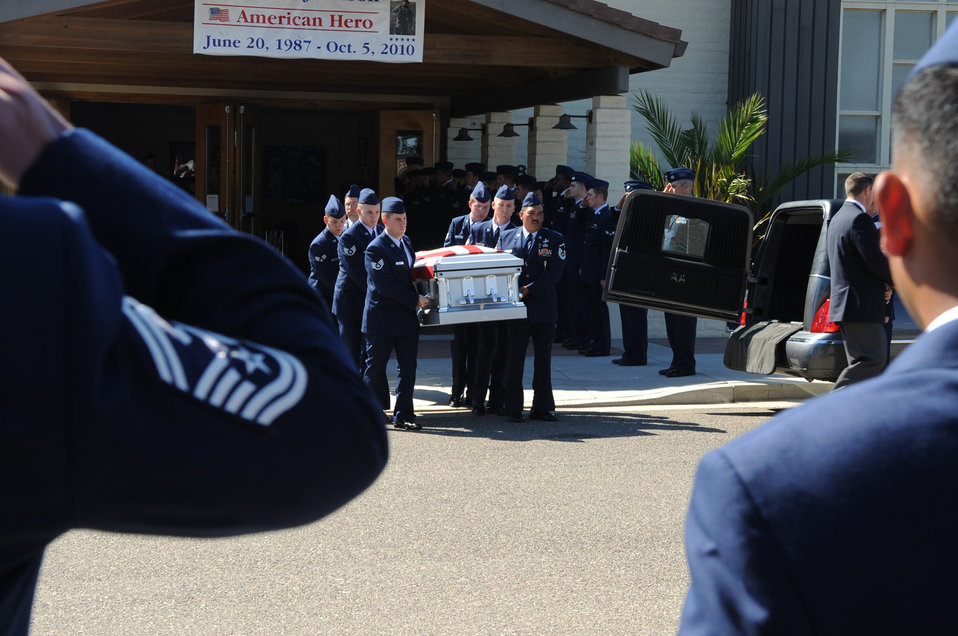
Memorial service for fallen Airman

Airmen salute as Senior Airman Daniel Johnson's casket is transferred from a memorial service to another service for the fallen Airman Oct. 13, 2010, in Santa Maria, Calif. Airman Johnson, a 30th Civil Engineer Squadron explosive ordnance disposal flight technician, was killed in the line of duty Oct. 5, 2010, in Kandahar, Afghanistan.